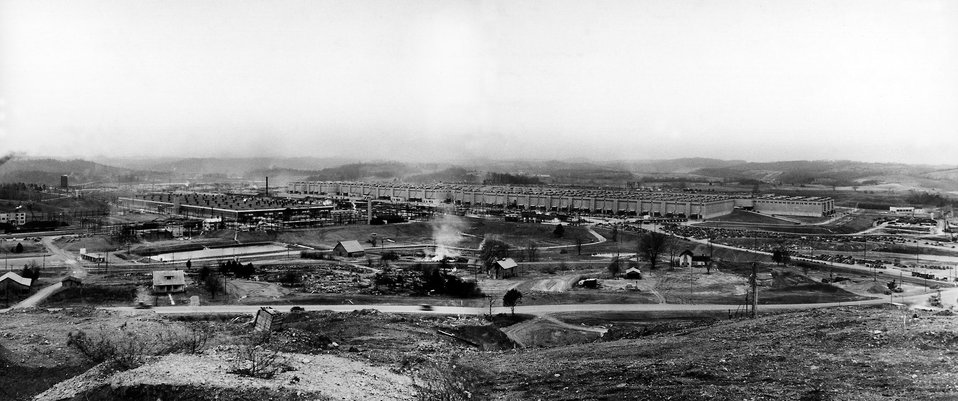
Construction Progress Overall View of “U” K-25 Original Houses Oak Ridge

k-25-341k-25-342 DOE photo by Ed Westcott 1946 Oak Ridge Tennessee